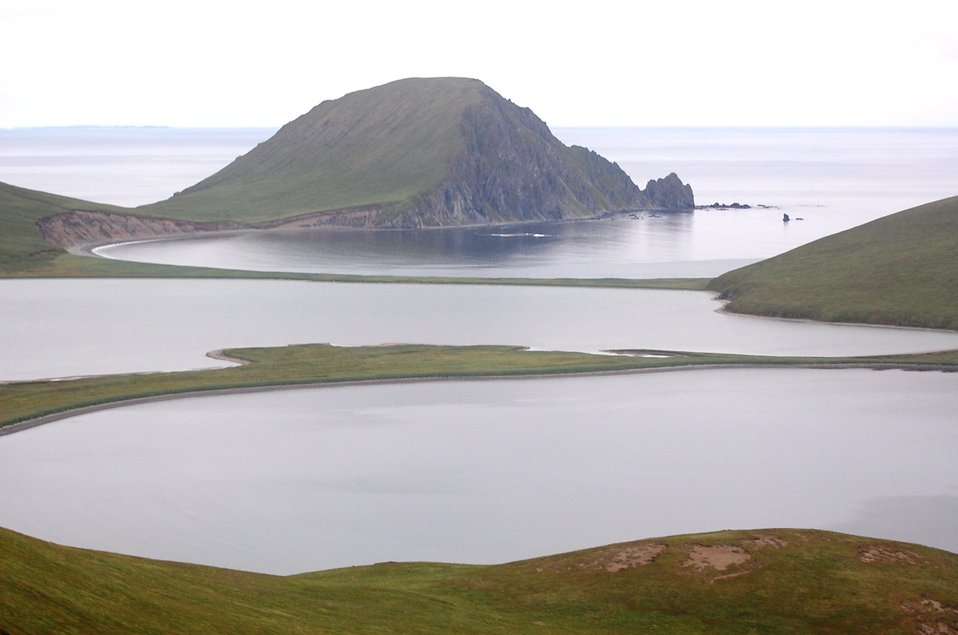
Unimak Landscapes

SE Unimak Island, Alaska Maritime National Wildlife Refuge